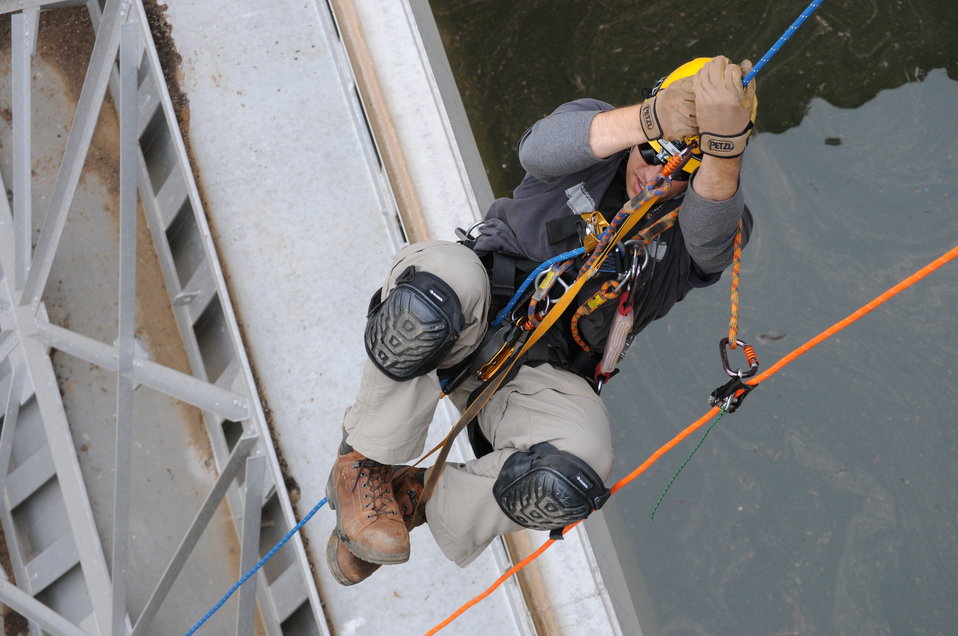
Corps’ engineers climb, inspect New Hogan Dam

Christopher Abela, a civil engineer with the U.S. Army Corps of Engineers Sacramento District, ascends a climbing rope during an inspection of the tainter gates at New Hogan Dam near Valley Springs, Calif., April 10, 2012. Tainter gates are a type of flood gate used in dams to control water flow. New Hogan Dam reduces flood risk to the city of Stockton and stores water used for irrigation, drinking and hydroelectric power.